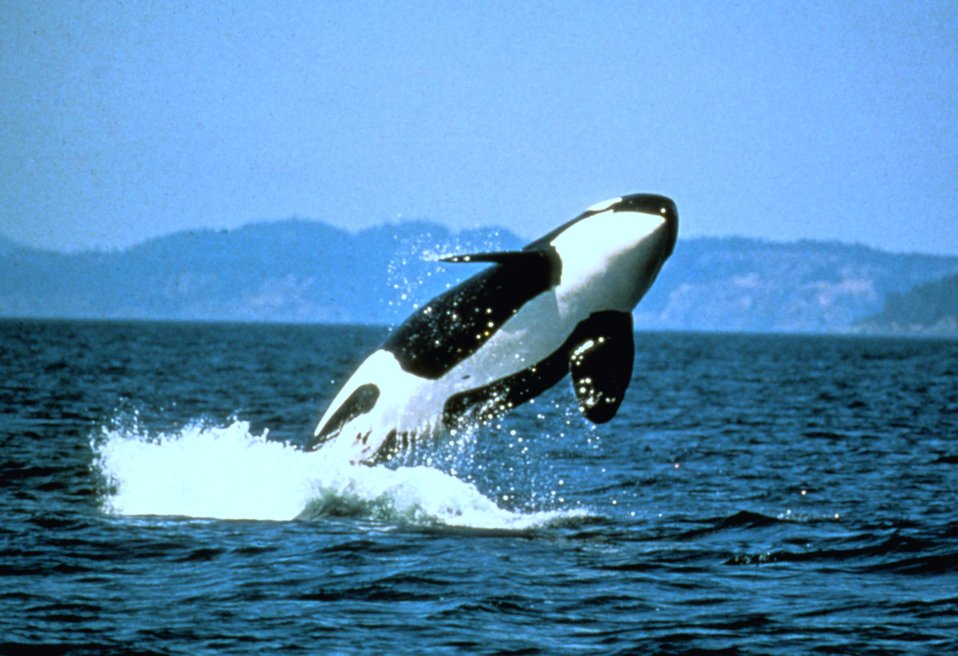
Killer whale breaching